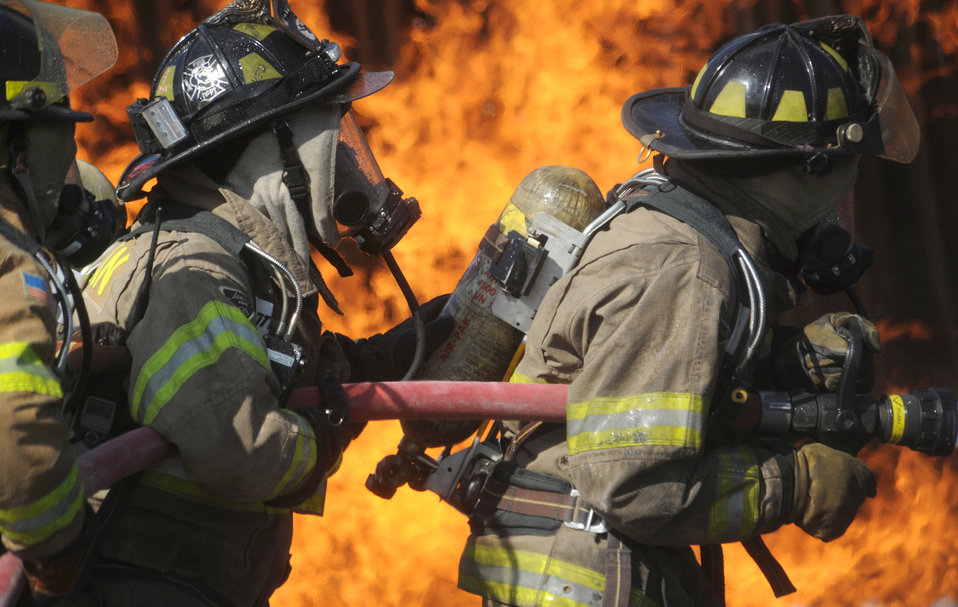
I've got your back

Carolyn McMillan (left) and Isaac Harris, firefighters from the Valdosta Fire Department, use a 1.75-inch hose to fight a ground fire during a live-fire training exercise July 27, 2010, at Moody Air Force Base, Ga.